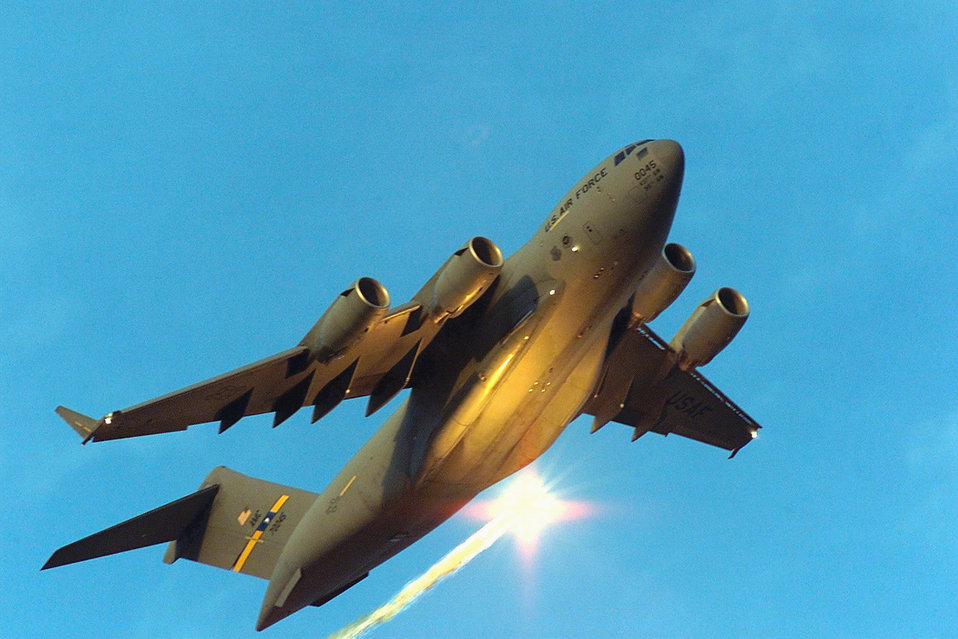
Evasive maneuvers

FILE PHOTO -- A C-17 Globemaster III practices evasive maneuvers during a simulated missile attack.